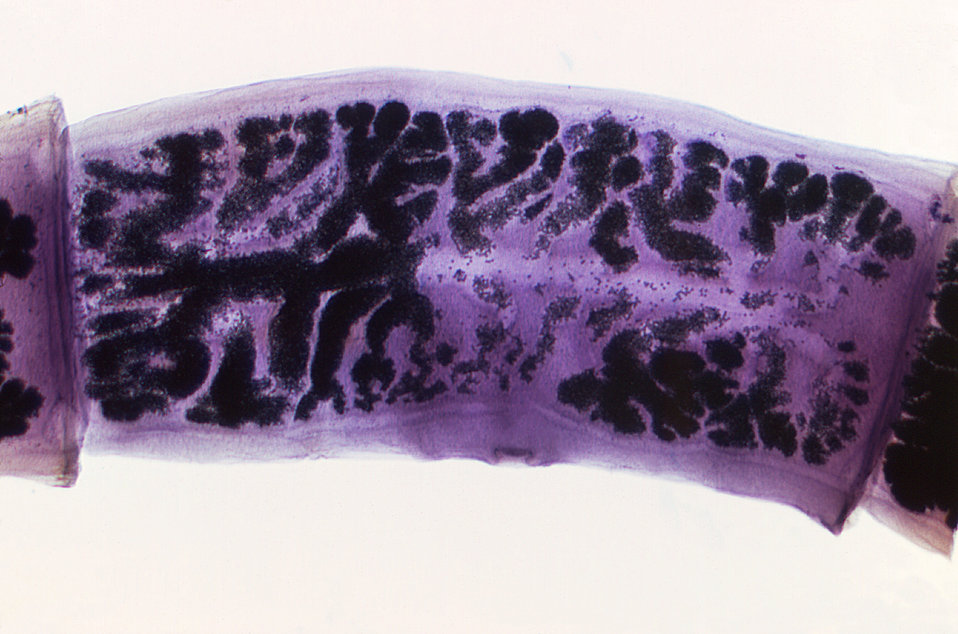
Under a very low magnification of only 8X, this photomicrograph revealed some of the ultrastructural morphology exhibited by three Taenia solium proglottids.Proglottids of Taenia spp.: